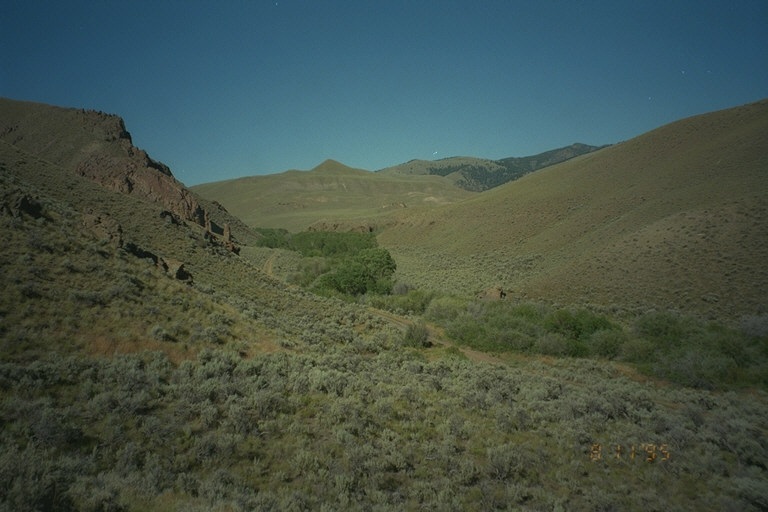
Riparian area Public Lands Salmon Field Office UCSC Upper Columbia Salmon Clearwater District